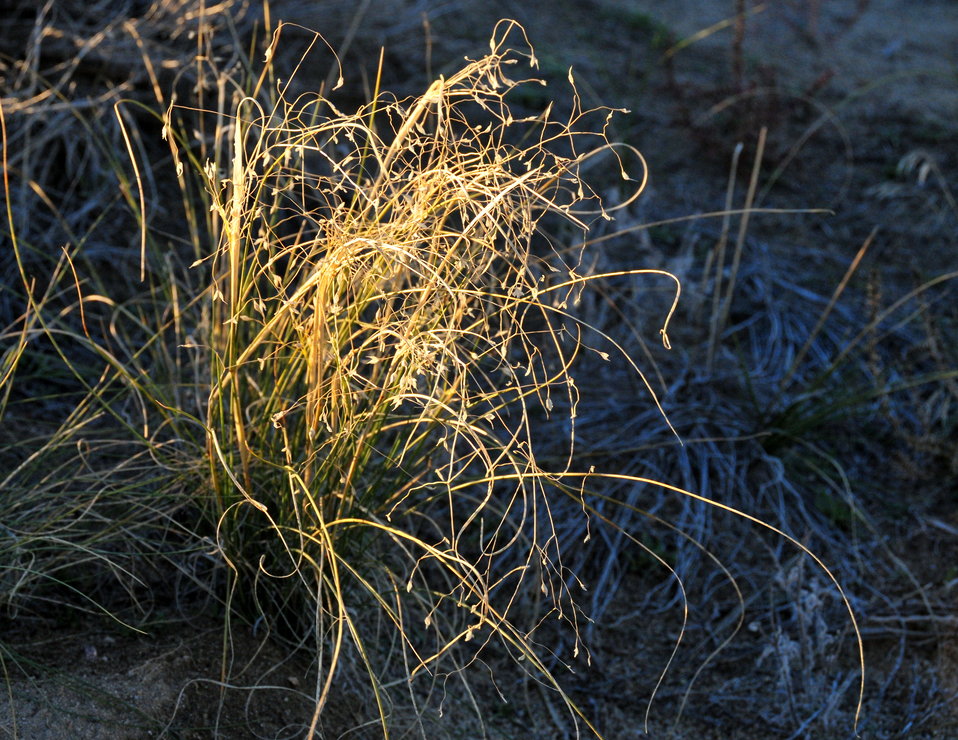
Indian ricegrass (Oryzopsis hymenoides) is a common species of grass in the sage-steppe of Seedskadee NWR and Southwest Wyoming.